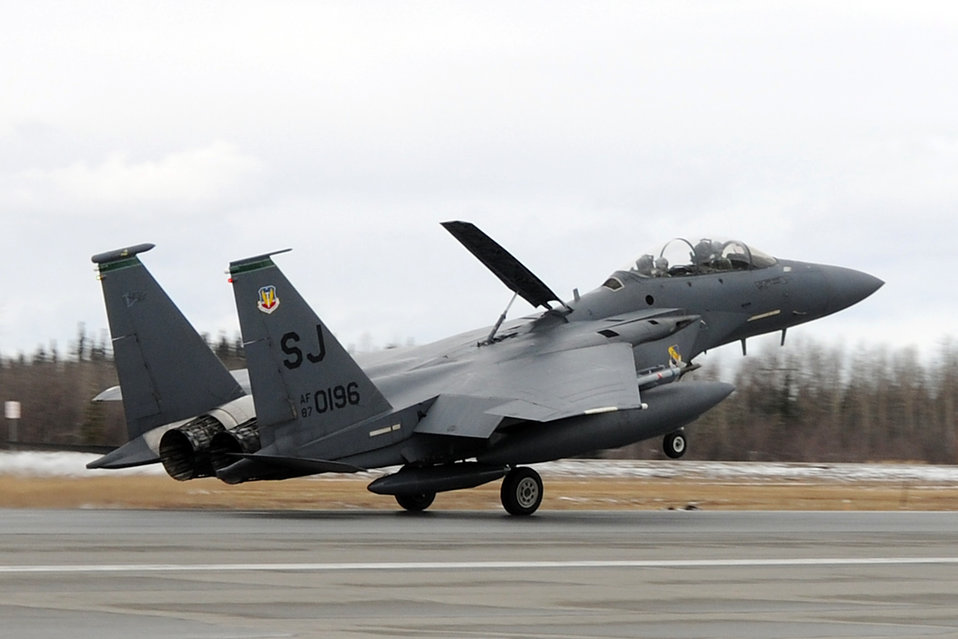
Red Flag-Alaska 10-2

An F-15E Strike Eagle from Seymour Johnson Air Force Base, N.C., lands at Eielson AFB, Alaska, April 13, 2010, for Red Flag-Alaska 10-2. Red Flag-Alaska allows aircrews to practice large-scale combat missions over the Pacific Alaskan Range Complex with air operations flown out of Eielson AFB and Elmendorf AFB, Alaska.